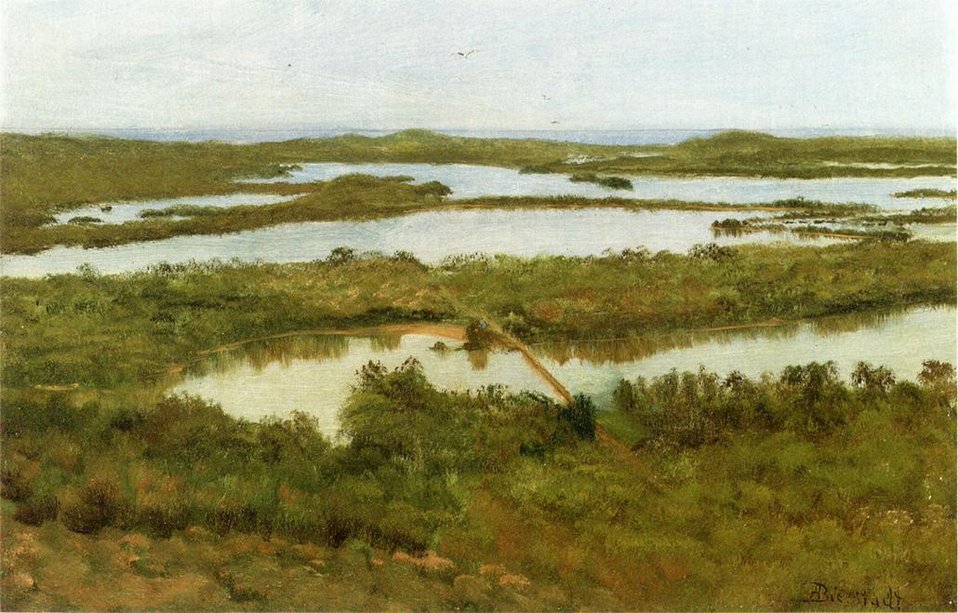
Bierstadt Albert A River Estuary